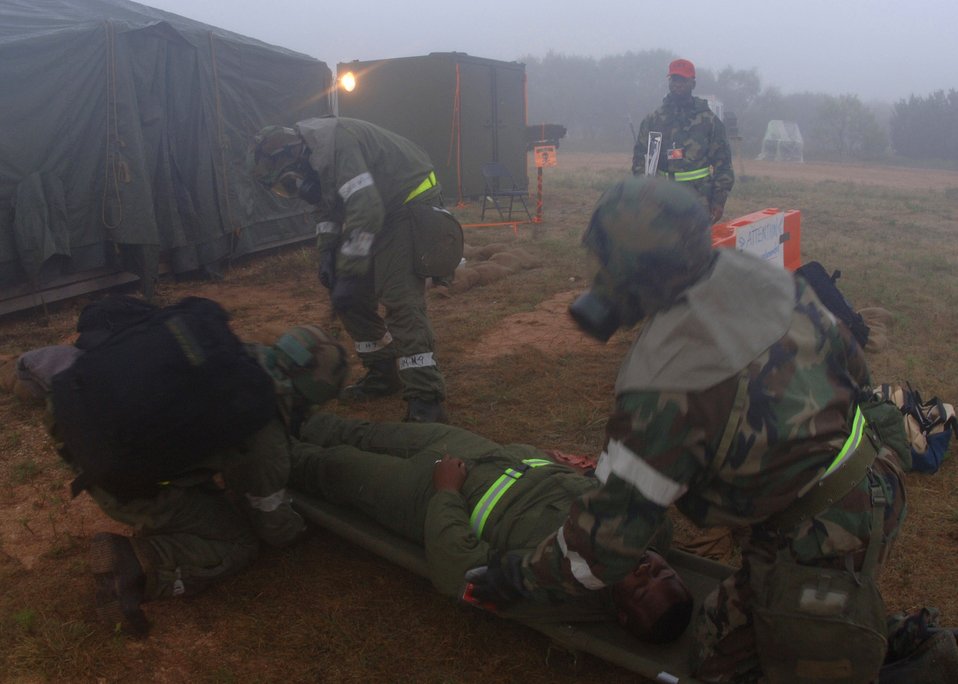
Combat care

DYESS AIR FORCE BASE, Texas -- An exercise evaluation team member evaluates, from left to right, Airman 1st Class Aaron Oeth, Senior Airman Micah Thornton, Staff Sgt. Roderick Jones as they strap a moulage victim onto a litter. The Airmen are assigned to the 7th Services Squadron.